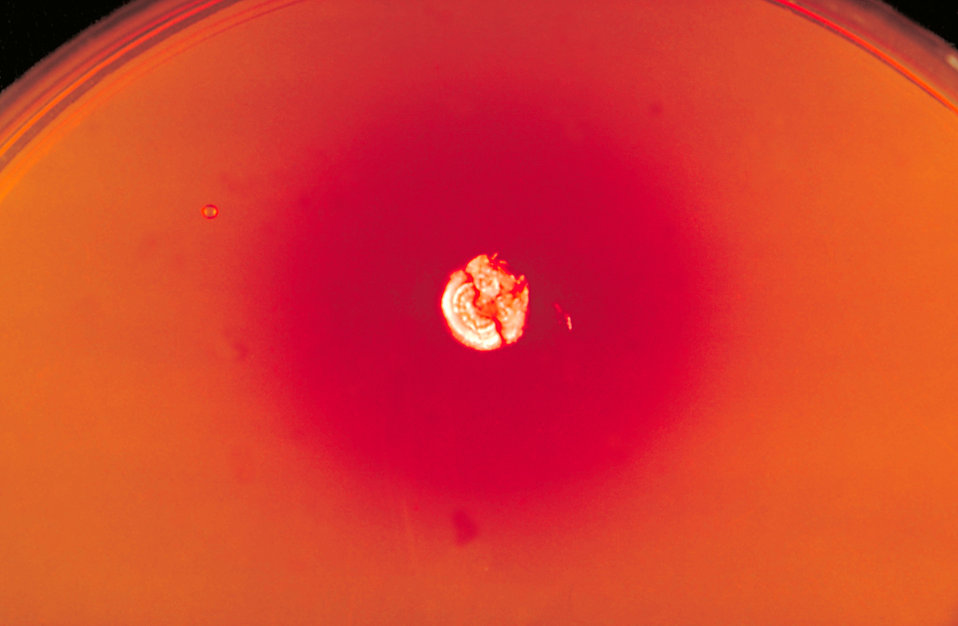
This was a DTM (Dermatophyte Test Medium) agar plate culture growing the fungus Trichophyton concentricum.